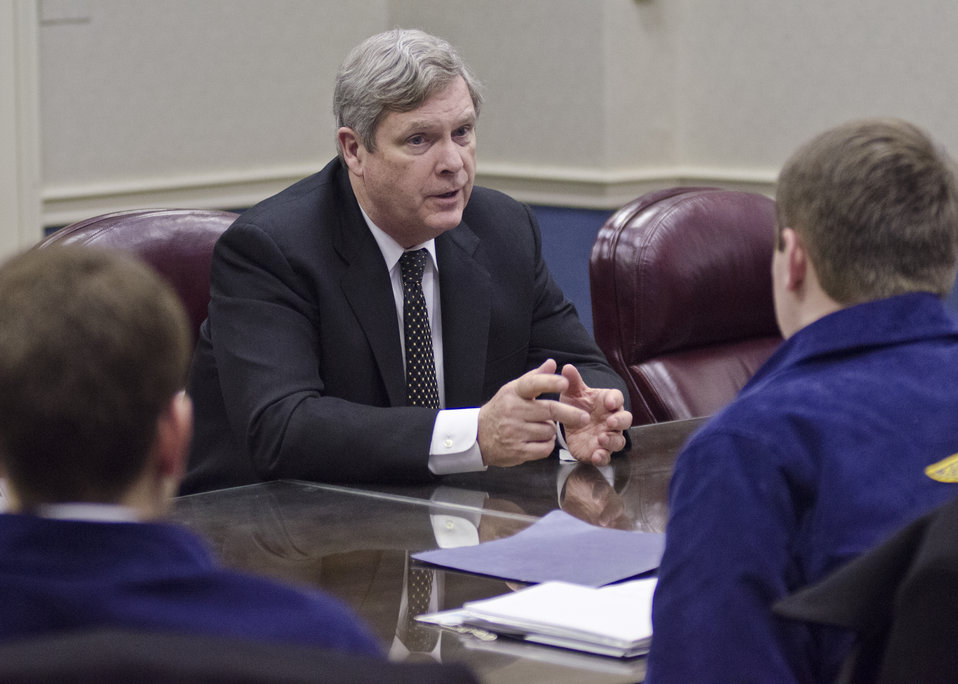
Agriculture Secretary Tom Vilsack meets with FFA National officers in the Wallace room at the U.S. Department of Agriculture (USDA) in Washington, D.C., on Wednesday, Jan. 16, 2013.